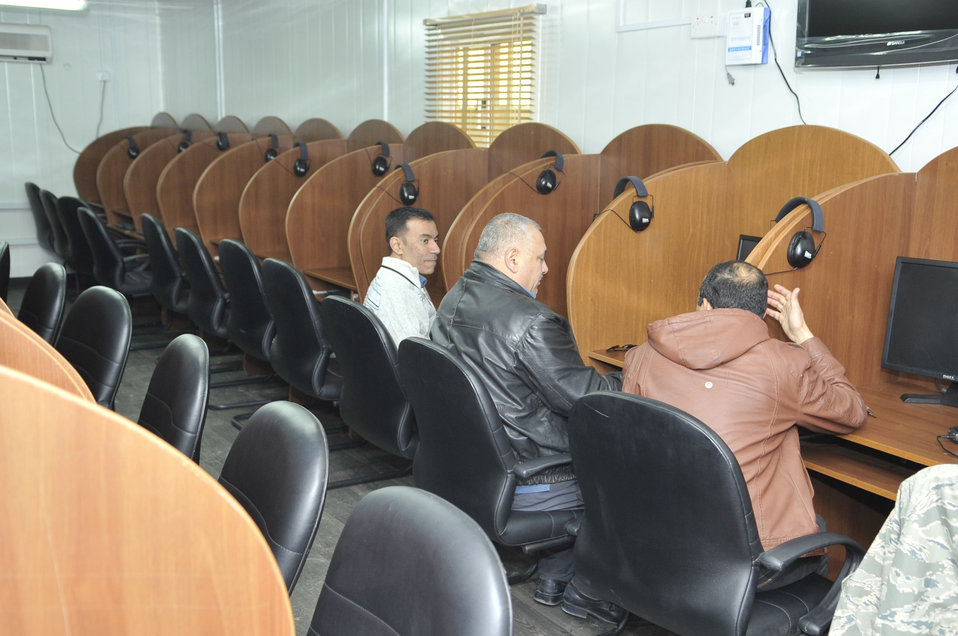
Airman provides gateway for Iraqis to American training

Iraqis sit at work stations waiting to take an English proficiency test Feb. 6, 2011, at Forward Operating Base Union III, Iraq.